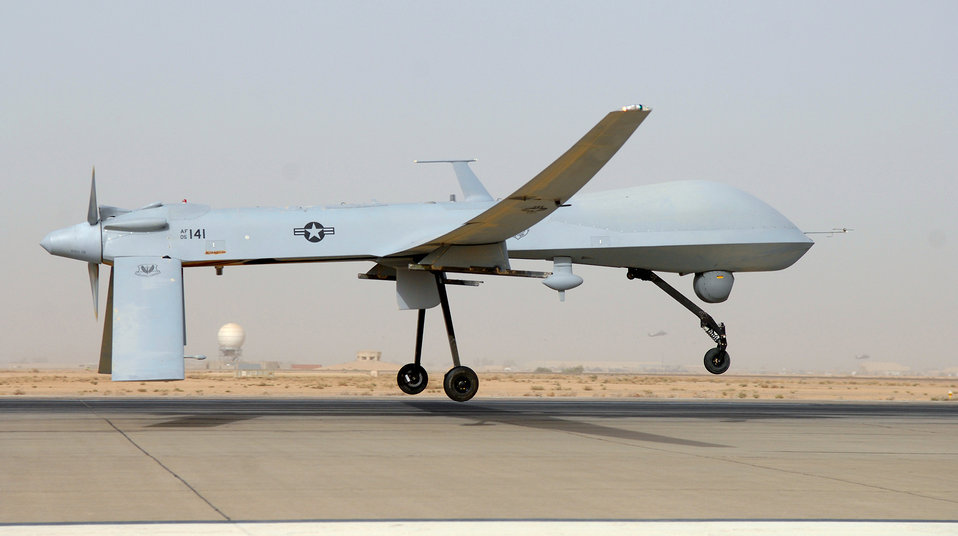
Airpower summary: Predator provide armed overwatch

An MQ-1 Predator unmanned aircraft prepares for take off in support of operations in Southwest Asia. The Predator is a medium-altitude, long-endurance, remotely piloted aircraft that conducts armed reconnaissance against critical targets.